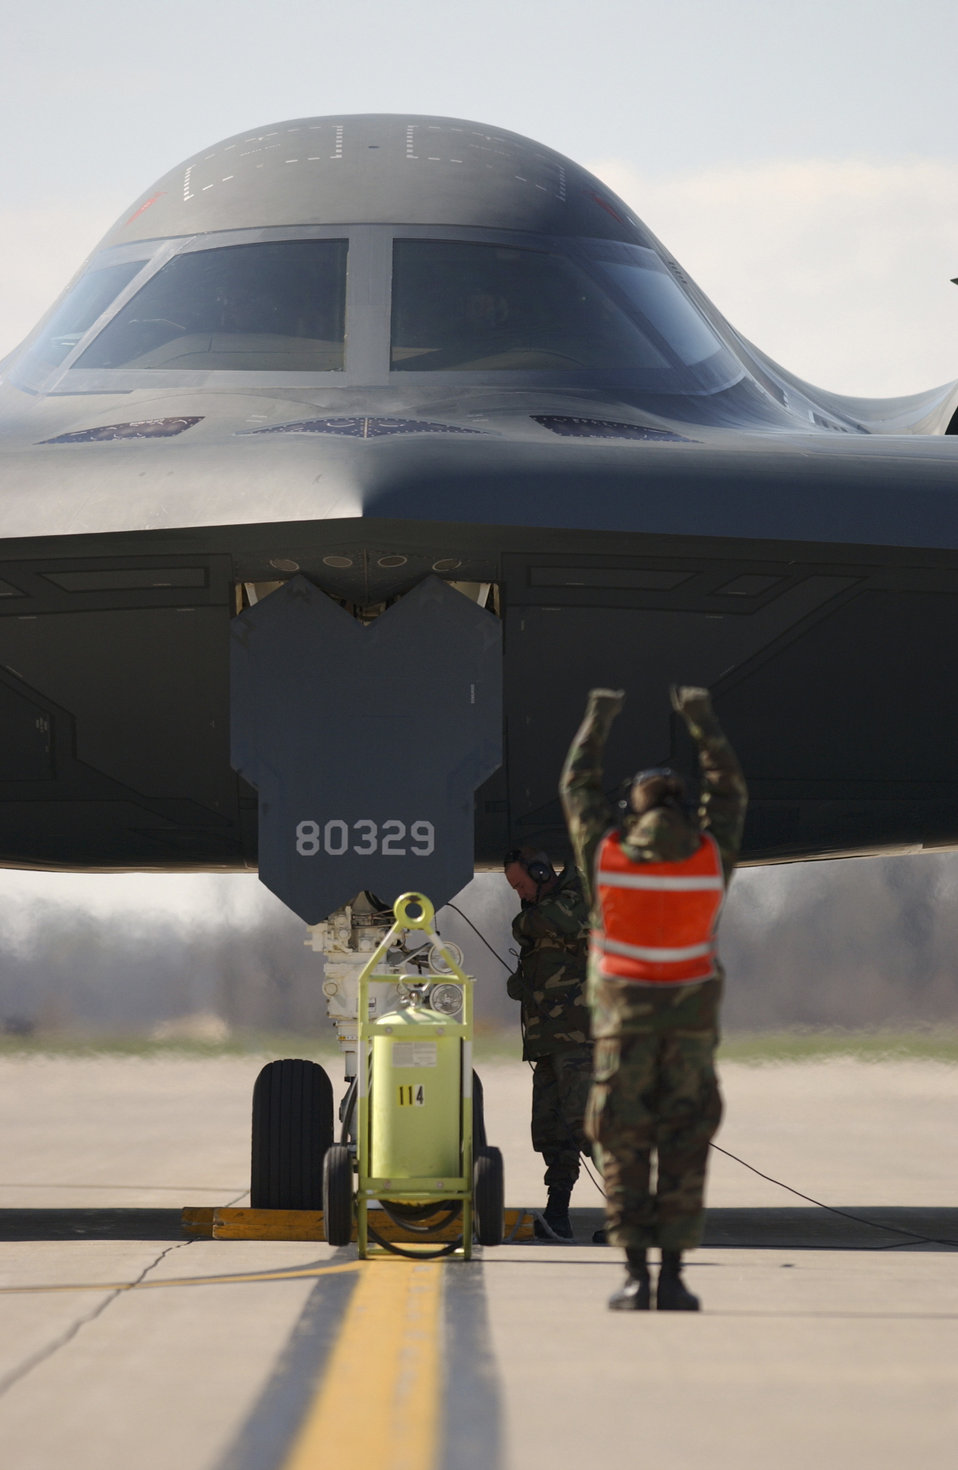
Spirit of Missouri

OPERATION IRAQI FREEDOM -- Airman 1st Class David Moses, a crew chief from the 509th Aircraft Maintenance Squadron at Whiteman Air Force Base, Mo., marshalls the B-2 named the Spirit of Missouri on March 31 at a forward-deployed location. The B-2 was returning from a combat mission over Iraq in support of Operation Iraqi Freedom.